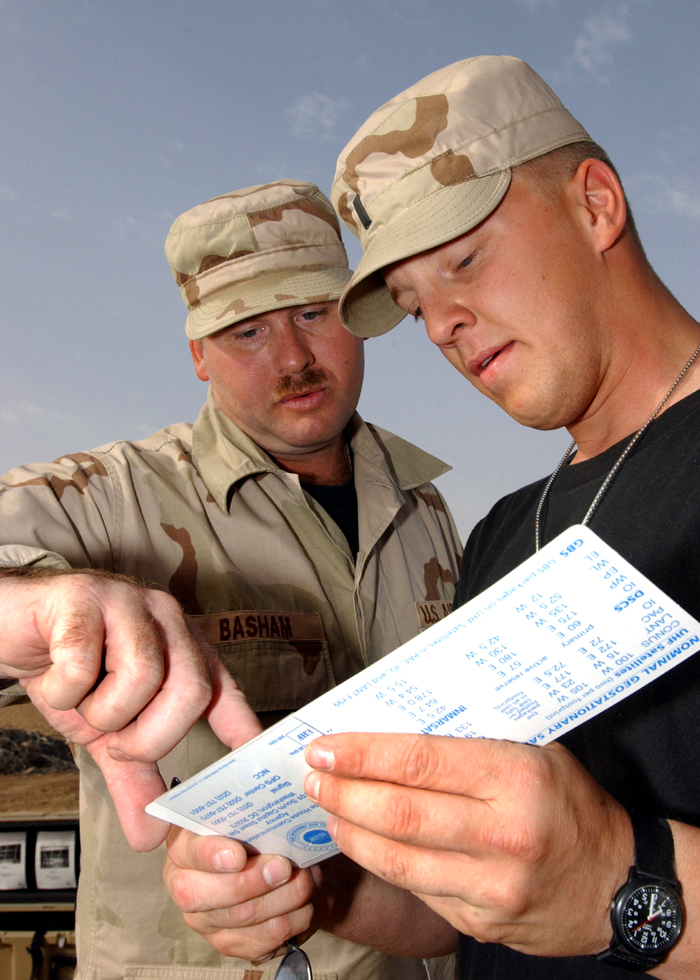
We are here

OPERATION IRAQI FREEDOM -- 2nd Lieutenant Jamie Velotta and Tech. Sgt. Gary Basham confirm sattellite position coordinates so they can properly position communication equipment on the ground to send and receive information. The 5th Combat Communications Group from Robbins Air Force Base, Ga. is deployed to Tallil Air Base Iraq supporting Operation Iraqi Freedom.